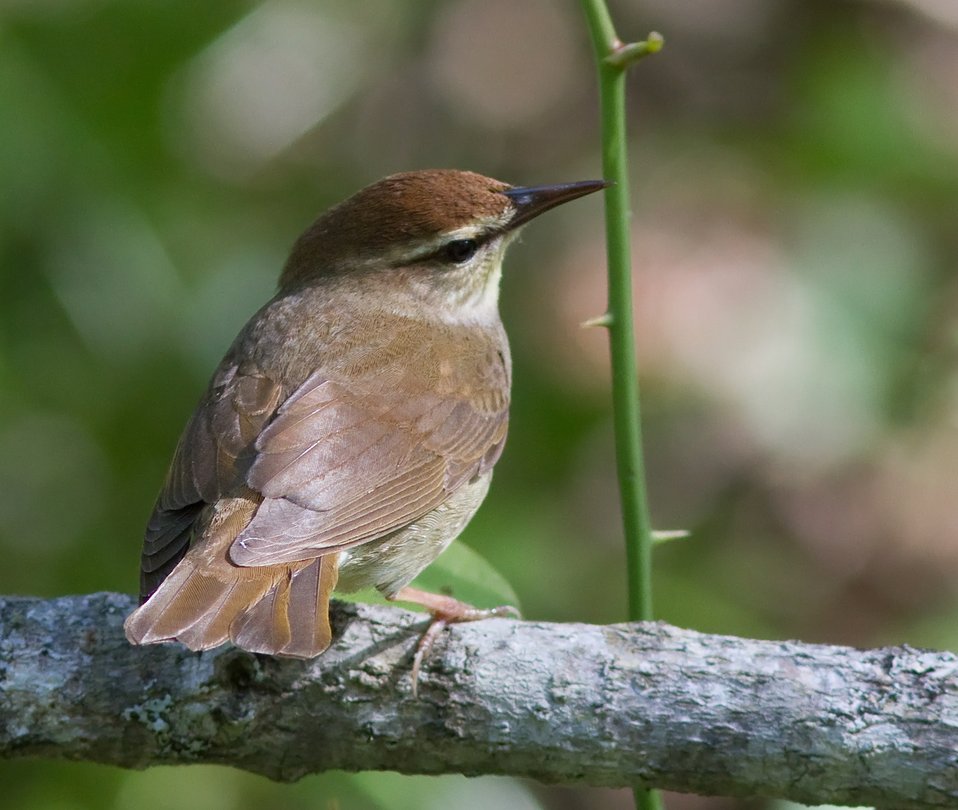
Swainson's warbler

Great Dismal Swamp National Wildlife Refuge.